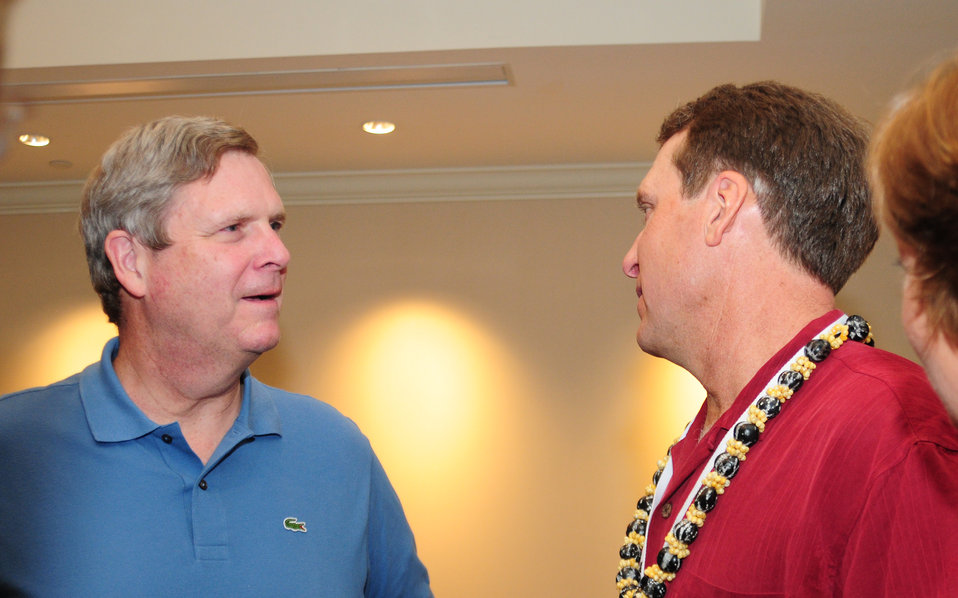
Agriculture Secretary Tom Vilsack talks with California Farm Bureau members at the Hilton Hawaiian Village, in Waikiki, Hawaii, on Sunday, January 8, 2012.